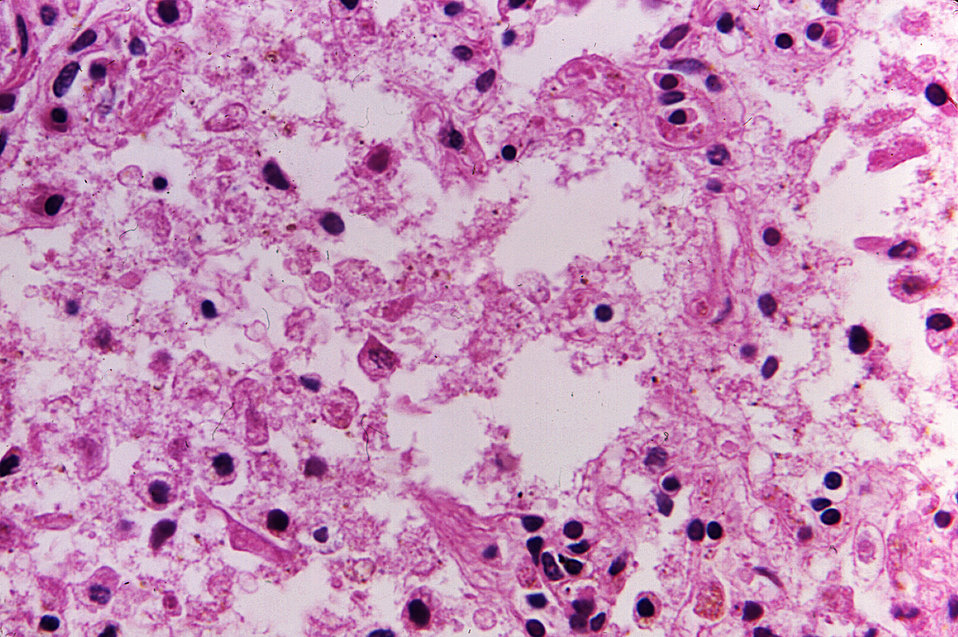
Under a magnification of 500X, this hematoxylin and eosin-stained (H&E) lung tissue sample revealed the histopathologic changes indicative of what was diagnosed as a case of fatal human plague from the country of Nepal.